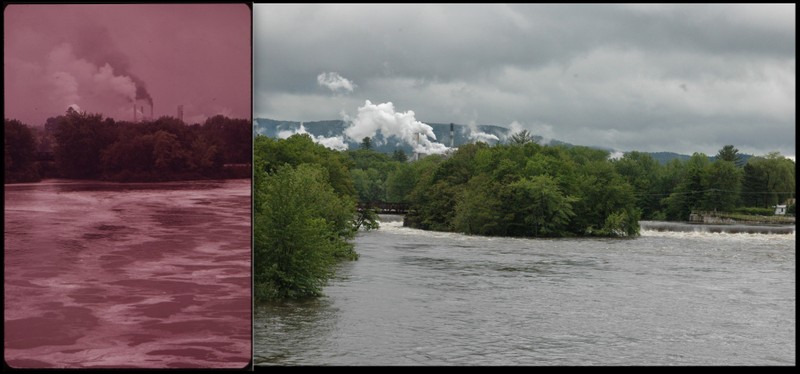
Rumford, Mexico, ME 1973 and 2012

'Then' Documerica Photo: June, 1973 View of the Androscoggin River from the Bridge at Jay International Paper Company Mill in Background by Charles Steinhacker.

June, 2012 photograph by Victoria Hampshire.

Join the project at www.flickr.com/groups/ourenvironment